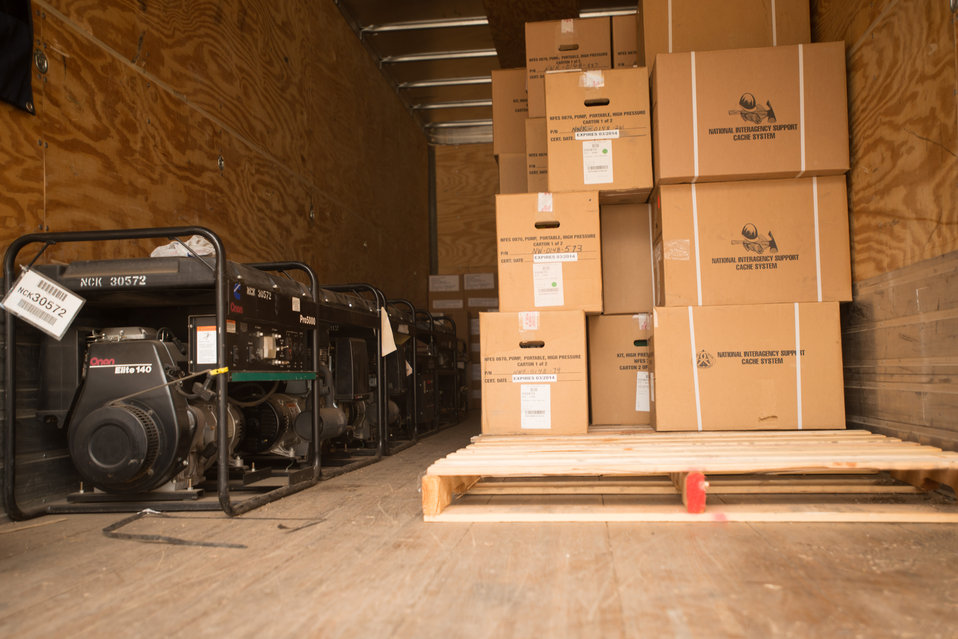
New high pressure water pumps available for firefighters at the Salmon River Complex Fire burning northwest of Sawyers Bar and west of Etna and Yreka, CA in the Klamath National Forest, on Tuesday, Aug. 6, 2013. It is vital that when a firefighter needs fire resistant clothing, a Mccloud Tool, Pulaski Axe, Combi Tool, pumps, connectors and hoses to draw water from a portable reservoirs to pressurize hand line (fire hoses), they go to this centralized point to get readily available item for issue or replacement as needed. These supplies have been shipped from the National Interagency Supply Cache System depots and/or other caches to this and other fires across the nation.